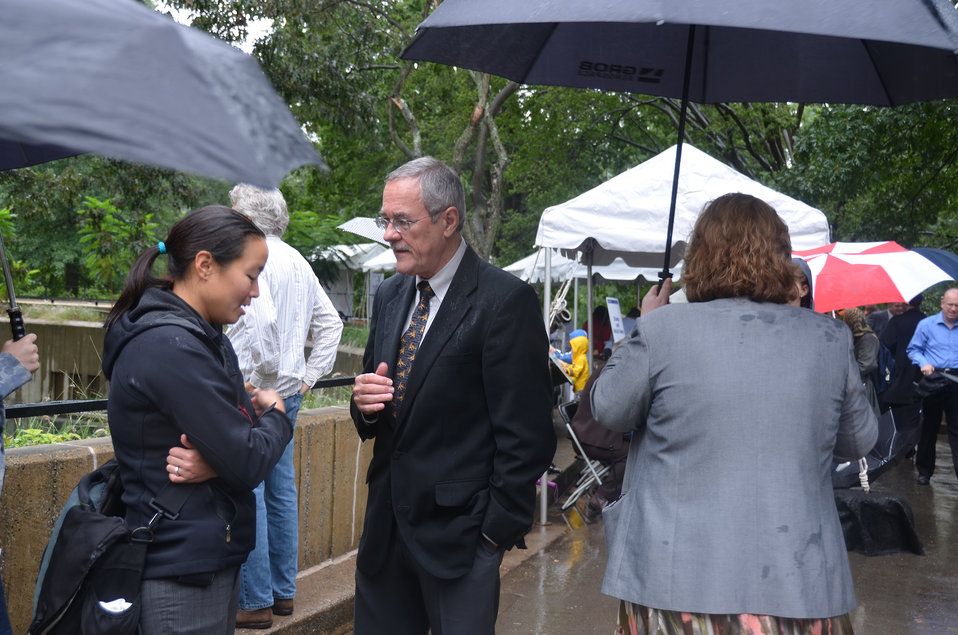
Save Vanishing Species Stamp First Day of Issue